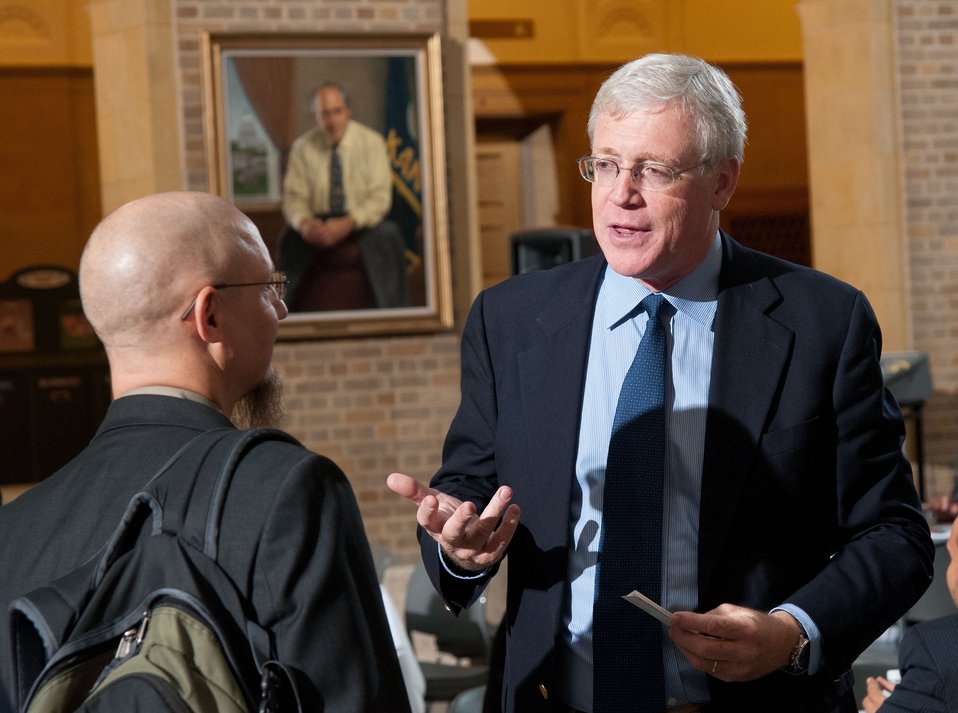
Iftar event, co-sponsored by the U.S. Department of Agriculture, U.S. Agency for International Development (USAID) and Islamic Relief USA, on Tuesday, August 7, 2012, in the USDA Whitten Building in Washington, D.C. Ramadan is the month of fasting, intensive prayer, sacrifice and worship for Muslims around the world. Throughout this month, Muslims fast during the day, abstaining from consuming food from dawn to dusk and using this time to purify spiritually. Fasting reminds Muslims of the poverty and hunger suffered by many in the United States and worldwide. It is a connection with those who are hungry not through devotion, but through the many global factors that lead to hunger and famine. Iftar is the meal at which Muslims break their fast at sunset, usually by eating dates, according to the Prophetic tradition.